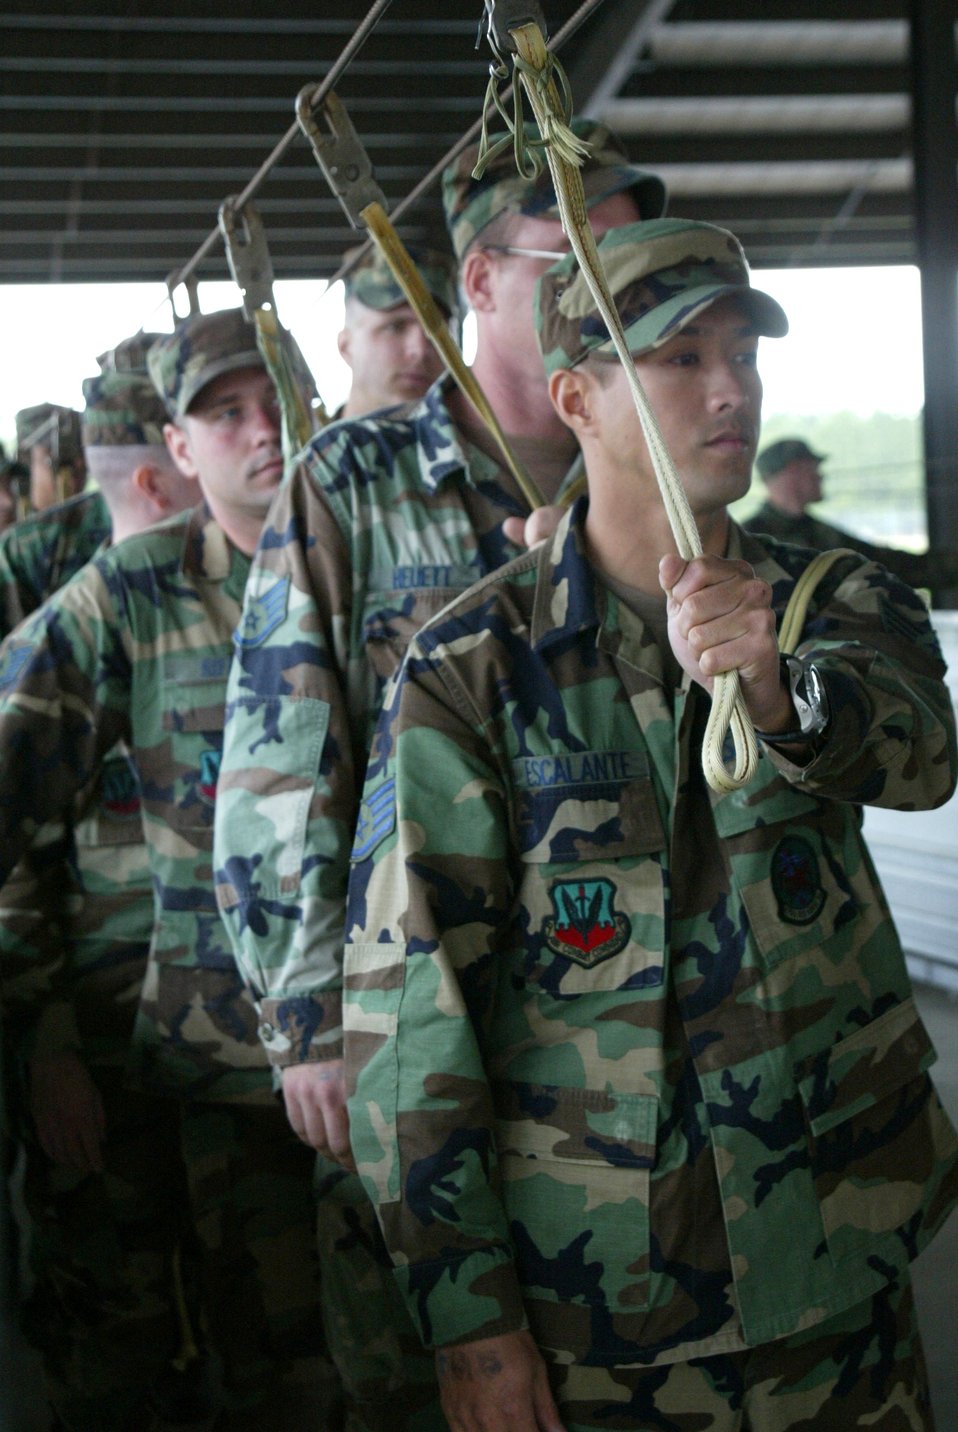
Air Force engineers take a jump

Airmen walk through a sustained airborne training session on Friday, April 21, 2006 before participating in a Joint Forced Entry Exercise at Pope Air Force Base, N.C. They are part of an airborne Red Horse unit training with the Army's 82nd Airborne Division.